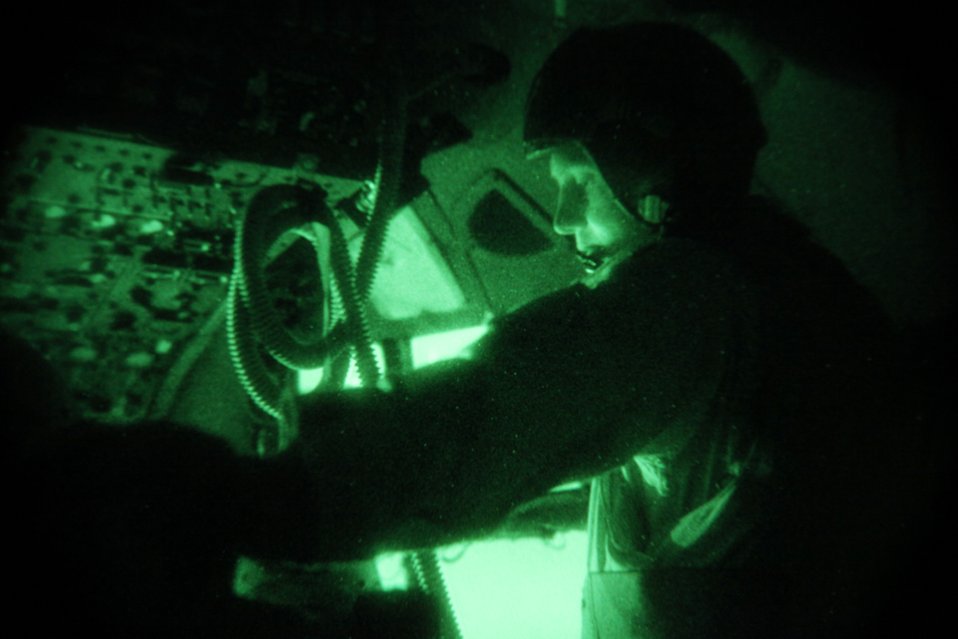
AC-130 crew provides air support

A crew member aboard an AC-130 conducts a communication check prior to takeoff March 3, 2010, from Bagram Airfield, Afghanistan. The flight crew was providing close-air support for ground troops conducting operations in Afghanistan's Parwan province.